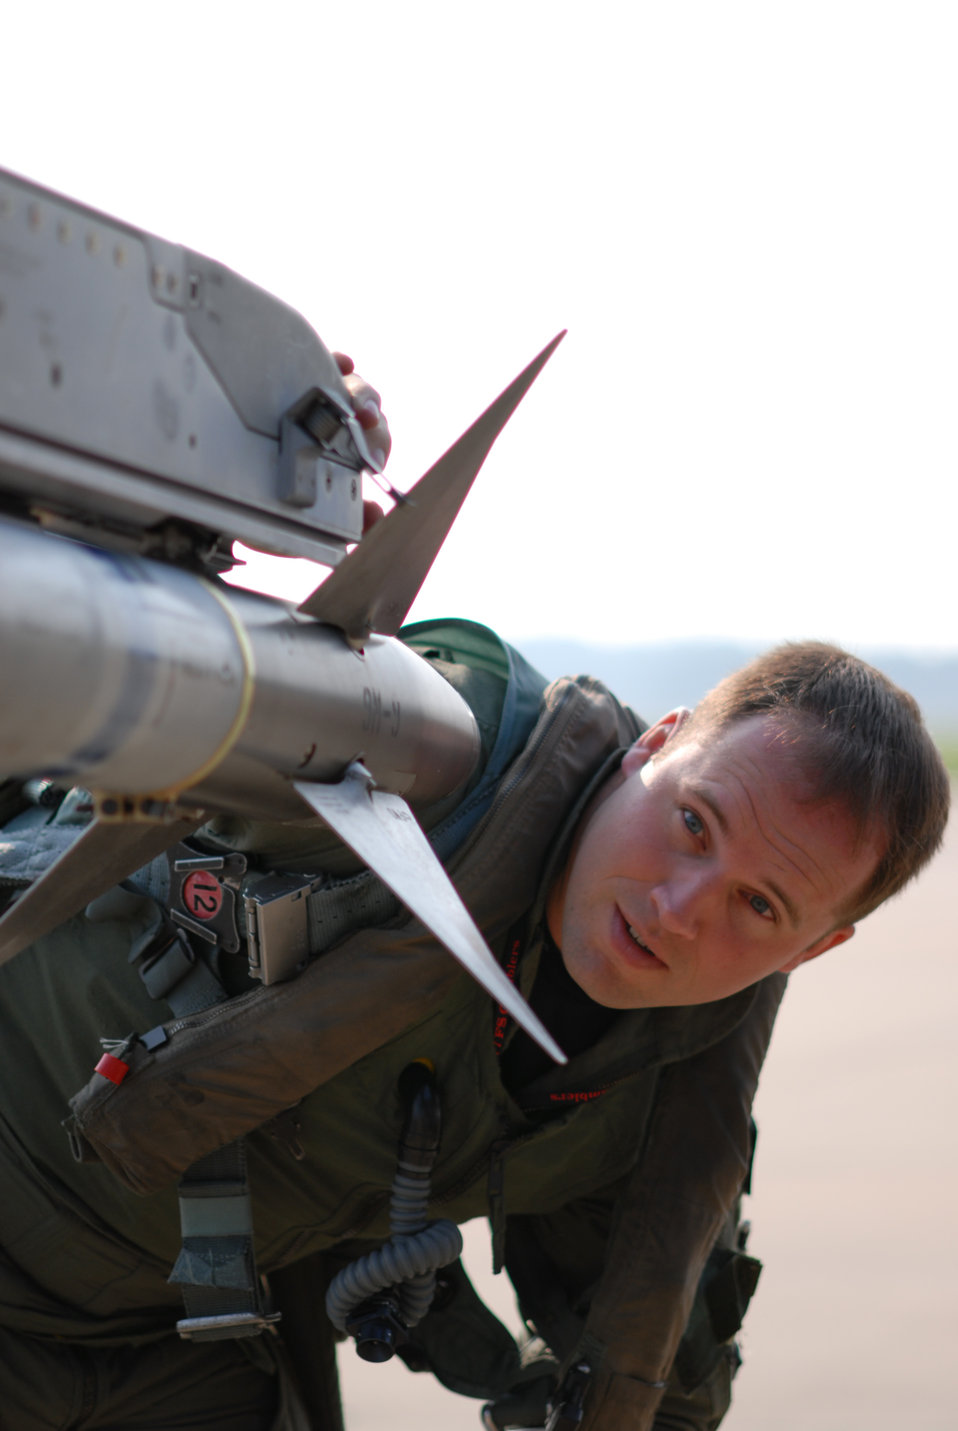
Dynamic Weasel keeps pilots sharp

Capt. Ben Russo does a pre-flight check on his F-16 Fighting Falcon before a mission supporting Operation Dynamic Weasel on Thursday, June 29, at Shaw Air Force Base, S.C. The exercise features various aircraft imitating combat operations in Southwest Asia. Captain Russo is assigned to the 77th Fighter Squadron.